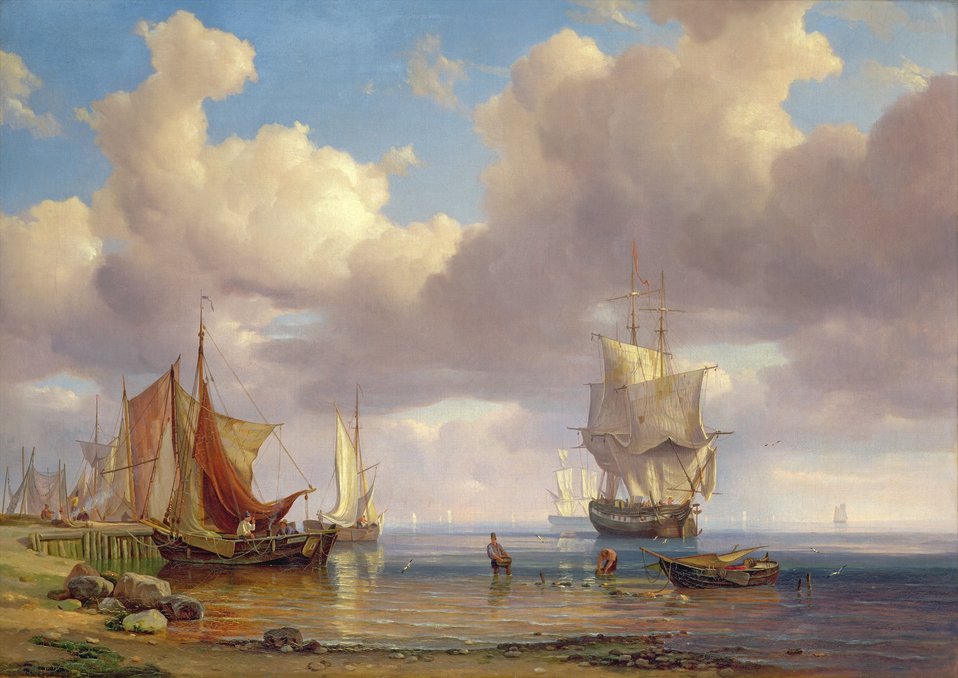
Adolph Friedrich Vollmer - Ruhige See